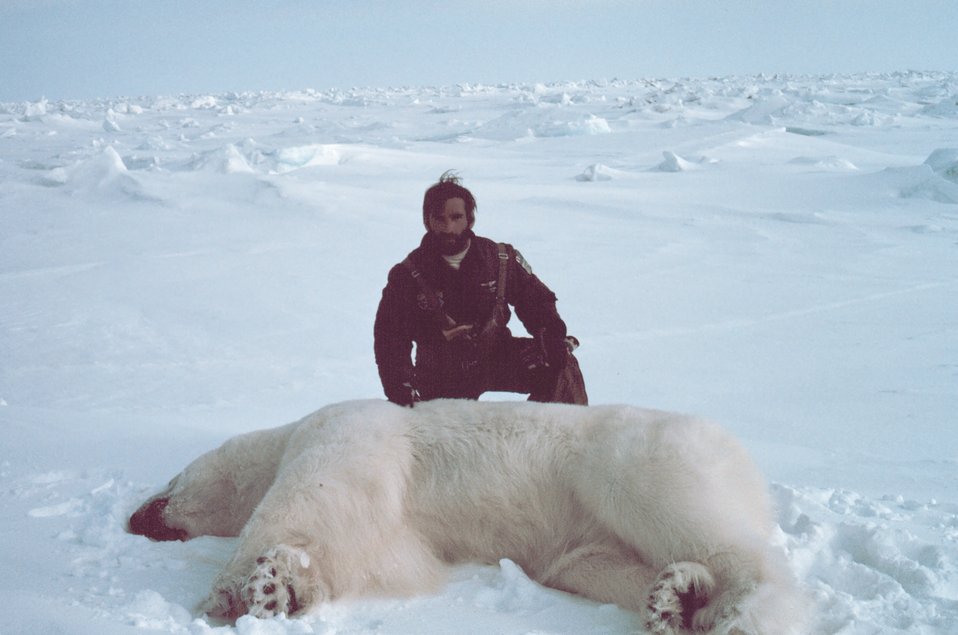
Helicopter pilot Budd Christman with sedated polar bear - Ursus maritimus. Bears were measured and tagged for future study. Outer Continental Shelf Environmental Assessment Program (OCSEAP) studies.